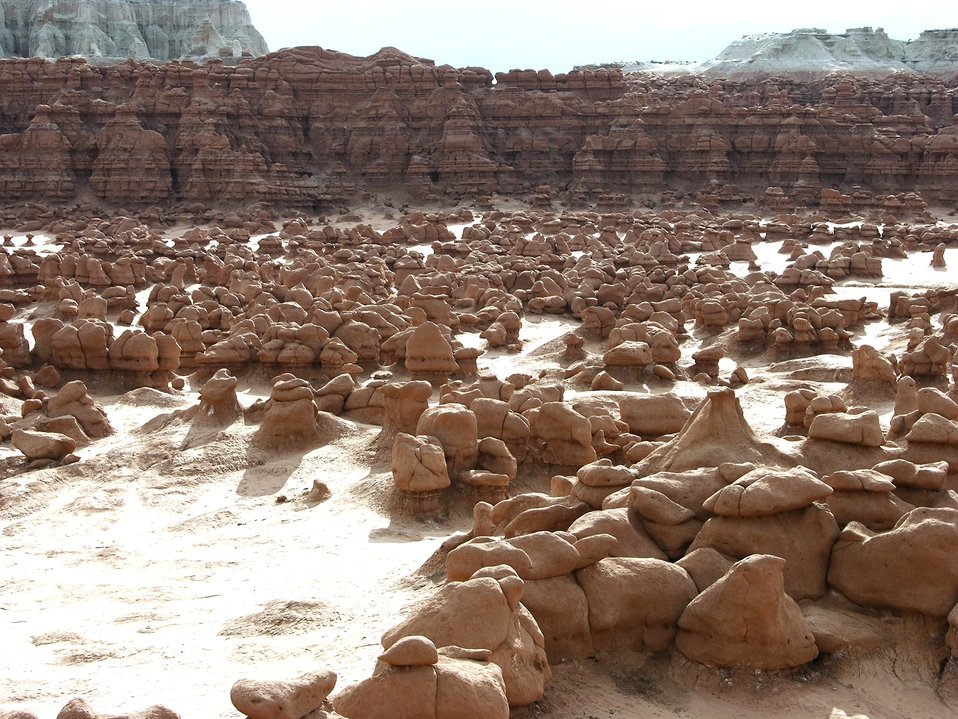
Goblin Valley State Park. Wind and water eroded features.